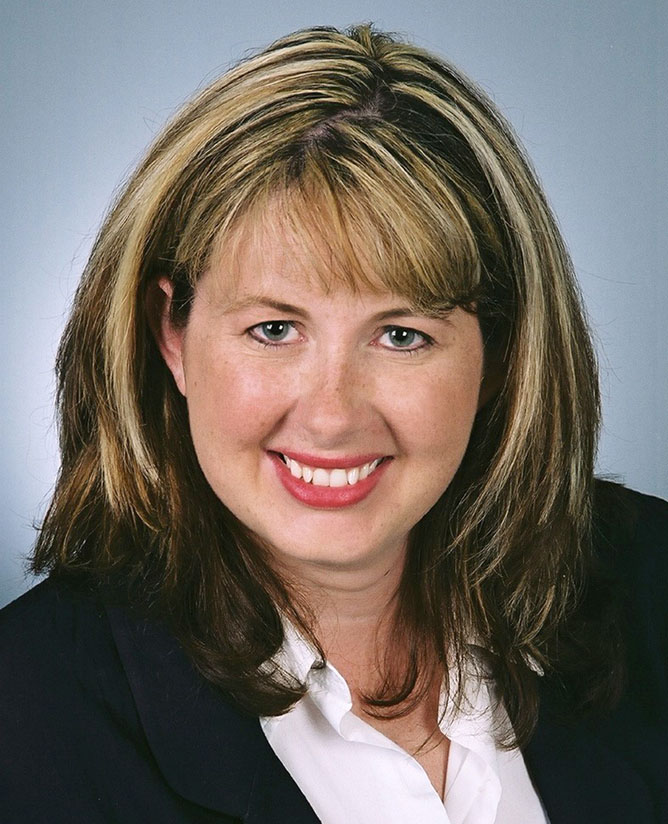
Minnesota Sen. Amy T. Koch